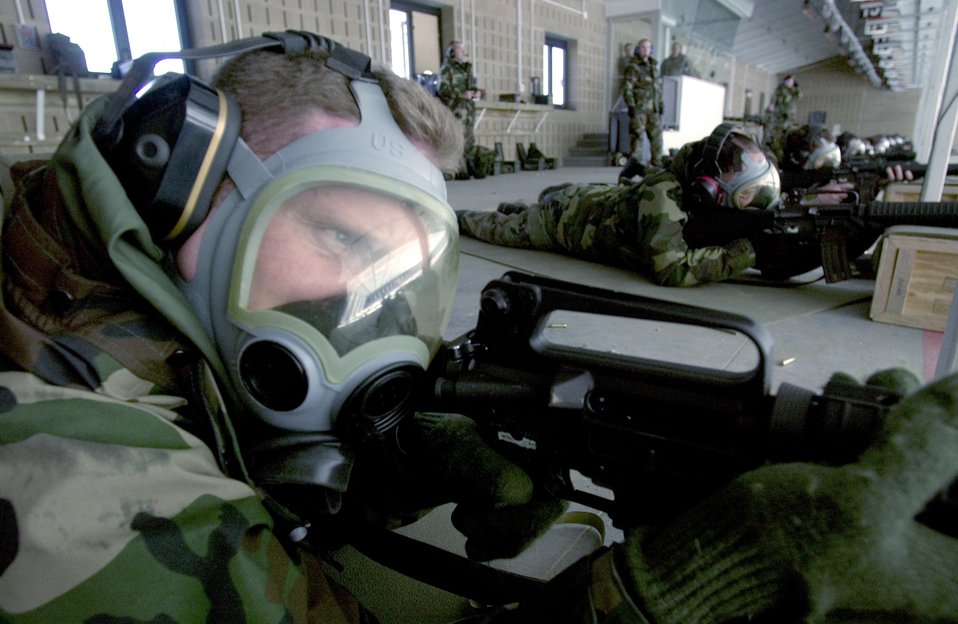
Weapons training goes expeditionary

OFFUTT AIR FORCE BASE, Neb. -- Staff Sgt. William Newcomb takes aim through the lens of his protective mask March 1 on the firing range here. Offutt officials said they incorporated the mask into qualification training in July to familiarize Airmen with using an M-16 in a chemical environment. Sergeant Newcomb is assigned to the 55th Mobile Command and Control Squadron.